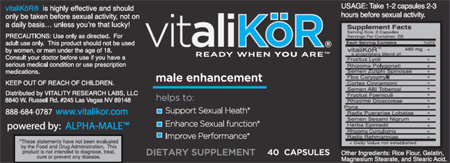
RECALLED – Dietary Supplement

November 13, 2013 – Product Recall – Vitality Research Labs, LLC, Issues Immediate Voluntary Nationwide Recall of 'VitaliKOR Fast Acting' Marketed as a Dietary Supplement, Due to Undeclared Active Ingredients .